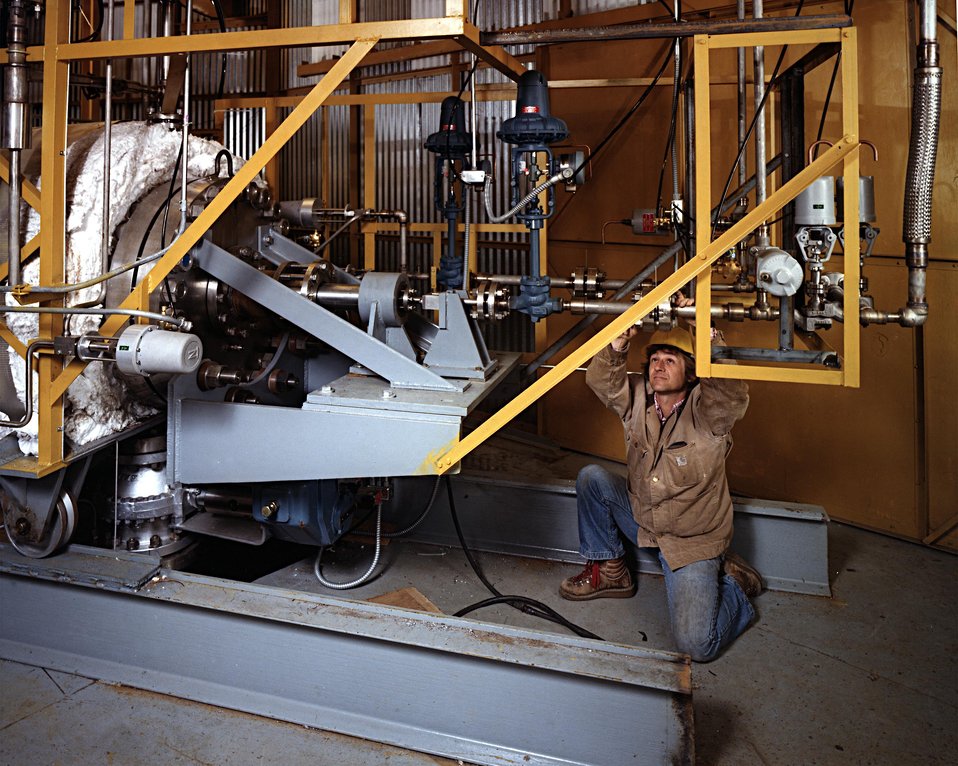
WORKER CHECKS THE HOT DISCHARGE END OF THE AUGER KILN.

RESEARCHERS WILL ASSESS THE FEASIBILITY OF GASIFYING BIOMASS TO PRODUCE FUEL IN A SMALL, CRITICAL PRESSURE, LOW TEMPERATURE, WATER/STEAM GASIFIER. IN THE GASIFIER, BIOMASS (WOOD,PLANT OR ANIMAL WASTES, ETC.) IS MIXED WITH STEAM AND OXYGEN AT HIGH TEMPERATURES AND PRESSURES TO PRODUCE GAS, LIQUID FUELS AND/OR FUEL OIL. A LOW-COST SYSTEM WAS PROPOSED, DIFFERENT TYPES OF BIOMASS WERE STUDIED, MODELS WERE ESTABLISHED, AND A THREE DRY TONS PER-DAY PROCESS DEVELOPMENT UNIT WAS DESIGNED. IN ADDITION, AN ECONOMIC ASSESSMENT WAS MADE CONCERNING THE MEDIUM BTU GAS END PRODUCT. THE PRODUCT GAS DISCHARGE IS IN THE UPPER LEFT AND THE WOOD ASH DISCHARGE IN THE LOWER LEFT. BEARINGS AND SEALS ARE IN THE CENTER WHERE STEAM (OR RECYCLED GAS) IS PIPED TO THE AUGER AND JACKET.